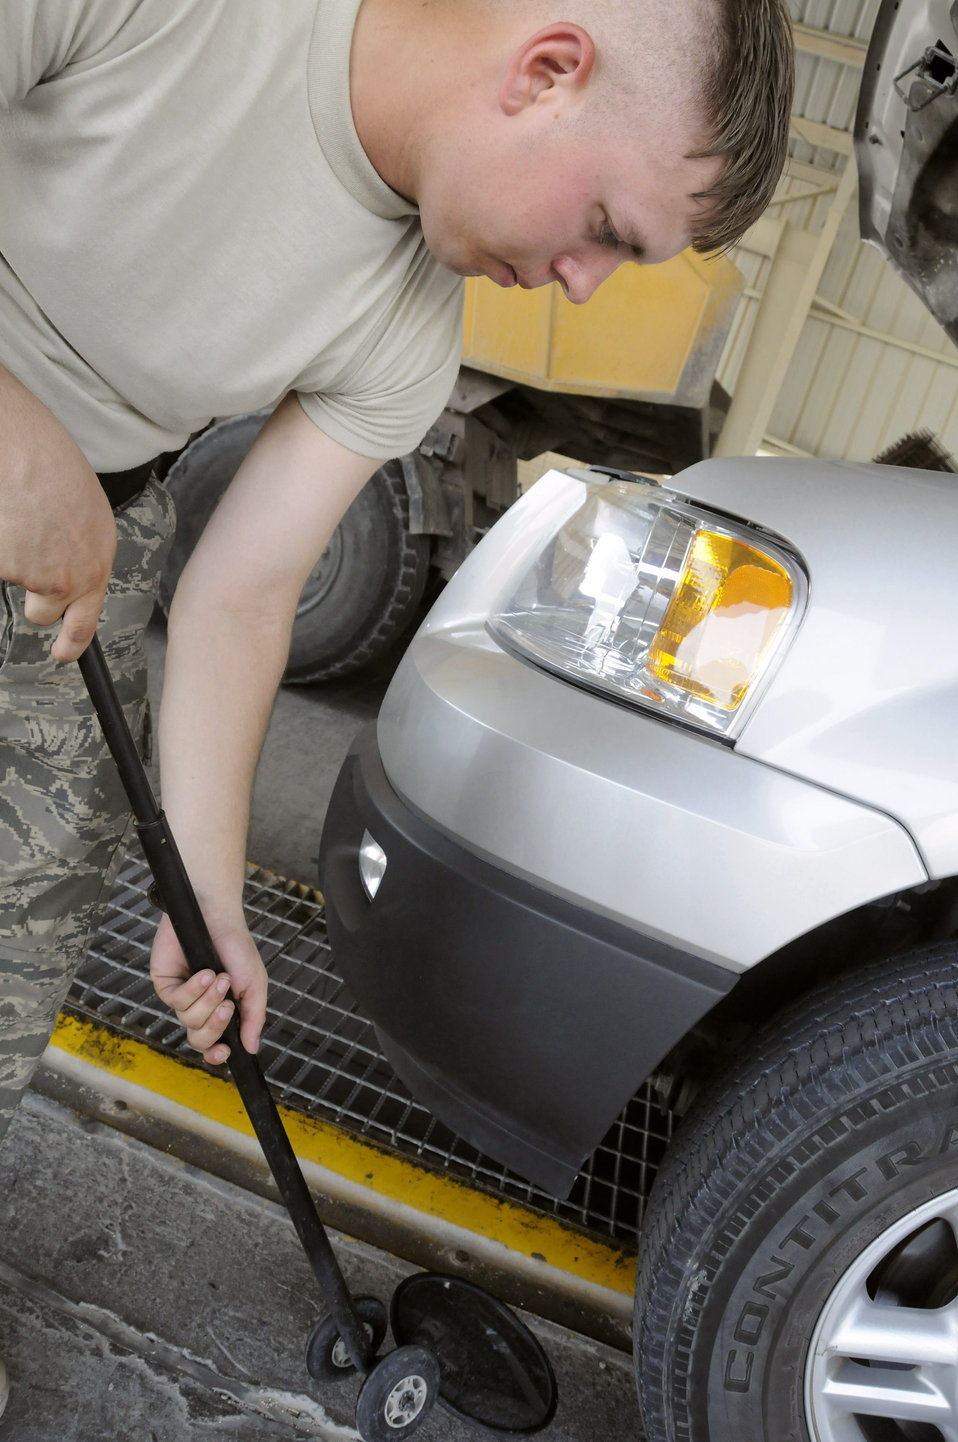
Nothing gets past us

Senior Airman Joseph Storto, a search member assigned to the 379th Expeditionary Security Forces Squadron, uses a search mirror to inspect the undercarriage of a vehicle Aug. 19 at an air base in Southwest Asia. Airman Storto and the rest of his team ensure the safety and security of the air base by carefully inspecting all incoming vehicles for explosives and weapons. Airman Storto, a native of Bodom, Finland, is deployed from Grand Forks Air Force Base, N.D.